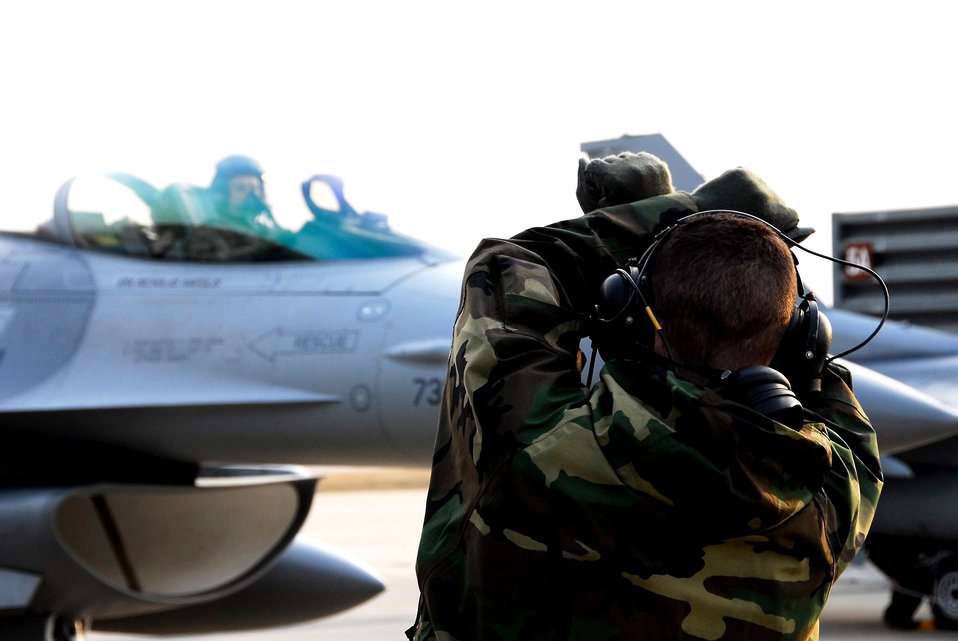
Kunsan, Eielson swap F-16s

A member of the 8th Aircraft Maintenance Squadron marshals in an F-16 Fighting Falcon at Kunsan Air Base, South Korea, after a Jan. 18 flight from Eielson Air Base, Alaska. The 80th Fighter Squadron will be receiving 18 Common Configuration Implementation Program Block 40 jets from the Alaskan-based unit and Eielson AFB will in-turn receive the 80th FS Block 30 jets for an aggressor squadron.